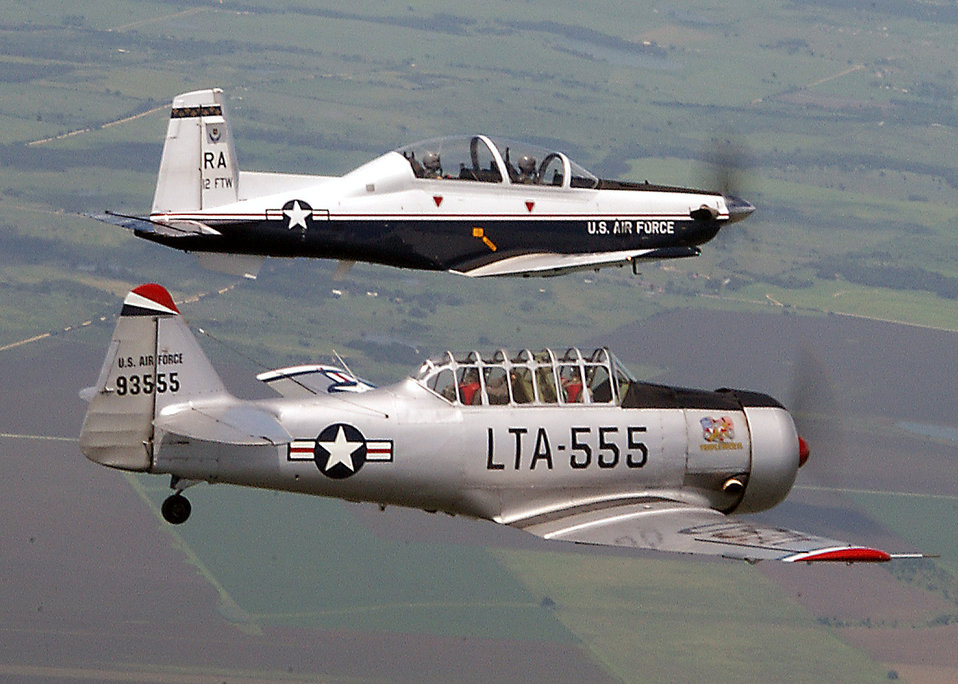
Texas two-step

RANDOLPH AIR FORCE BASE, Texas -- A T-6A Texan II aerial demonstration aircraft flies side-by-side with a vintage T-6 Texan. The two-ship flyby is called a